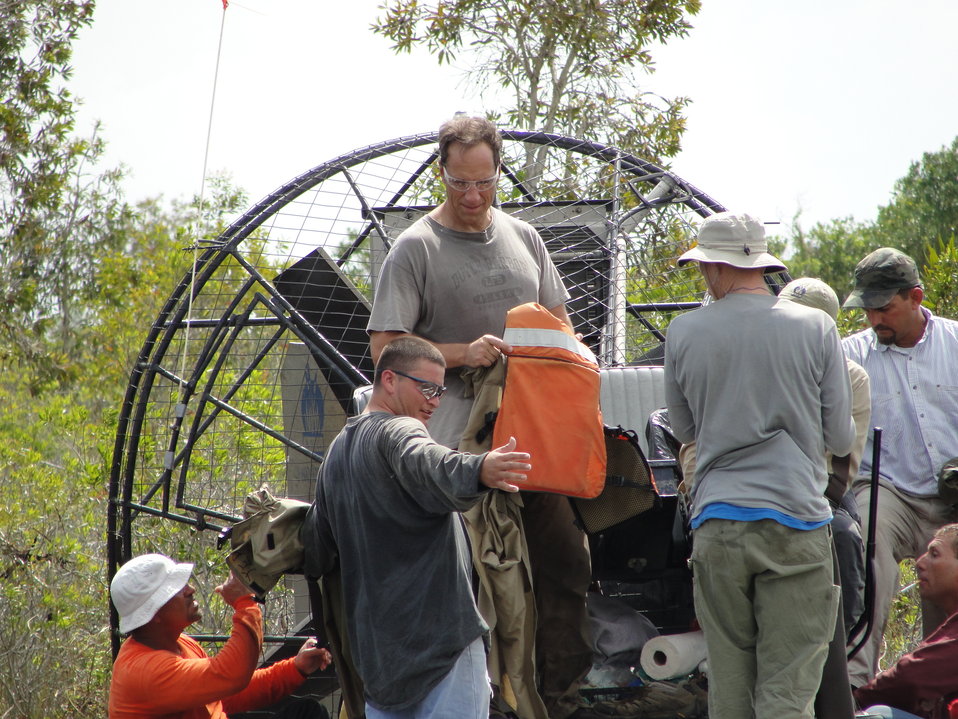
melaleuca on Dirty Jobs

In April 2010 Mike Rowe, host of the Discovery Channel series “Dirty Jobs with Mike Rowe,” and his crew prepare to head into the northernmost reaches of the Everglades to film invasive species removal work at the Arthur R. Marshall Loxahatchee National Wildlife Refuge in Florida. (Phil Kloer//USFWS)